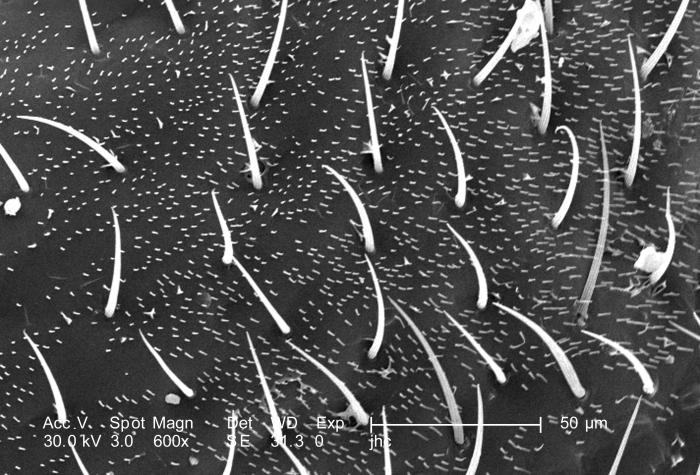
At a magnification of 600X, this scanning electron micrograph (SEM) depicted some of the morphologic details found on the surface of what was an unidentified 1/4"-sized black flying insect with a small red mark on its dorsum, found in the suburbs of Decatur, Georgia. As a member of the Phylum Arthropoda, i.e., Arthro = 'jointed', and poda 'leg', this insect sported three pairs of jointed legs, which placed it into the Family, Insecta>.